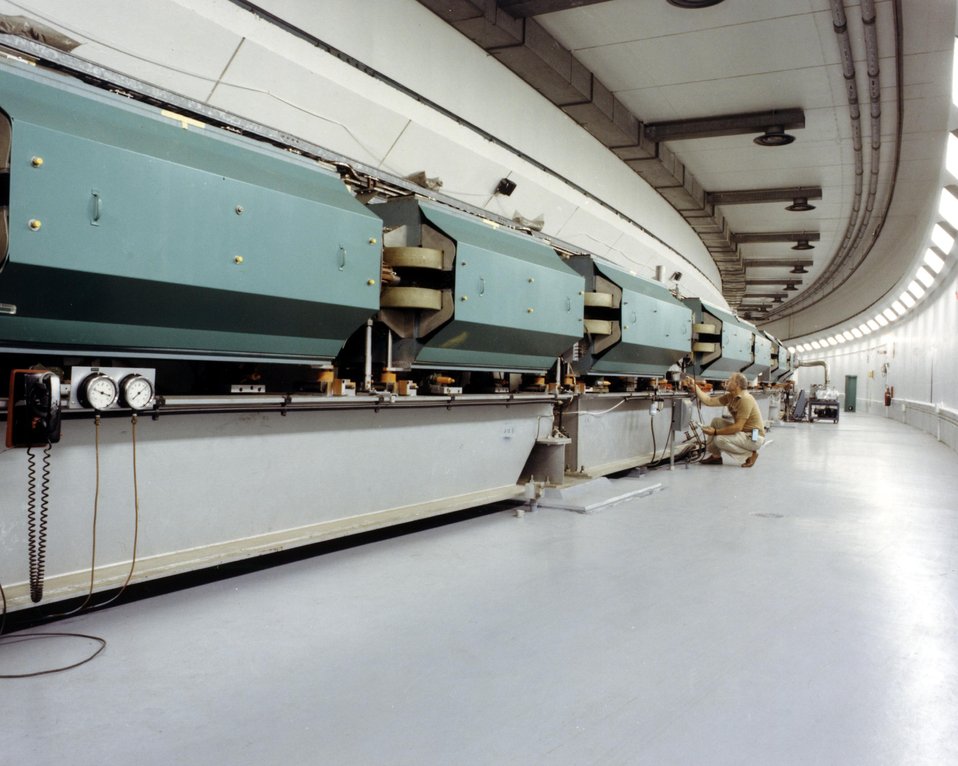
TECHNICIAN WORKING ON ONE OF THE 240 MAGNETS IN THE AGS RING.

THE AGS ACCELERATES PROTONS (THE NUCLEI OF HYDROGEN ATOMS) TO AN ENERGY OF 30 BILLION ELECTRON VOLTS (GEV) TO PROVIDE PROJECTILES FOR SMASHING THE NUCLEUS OF OTHER ATOMS. THE ENORMOUS ENERGY RELEASED IN THIS COLLISION SCATTERS THE PRIMARY PROTONS AND THE CONSTITUENTS OF THE TARGET NUCLEUS AND ALSO RESULTS IN THE PRODUCTION OF NEW UNSTABLE SHORT LIVED PARTICLES NOT FOUND IN ORDINARY MATTER. THE STUDY OF THE SCATTERING AND PRODUCTION PROCESSES PROVIDES INFORMATION ABOUT THE CONSTITUENTS OF THE PROTON.